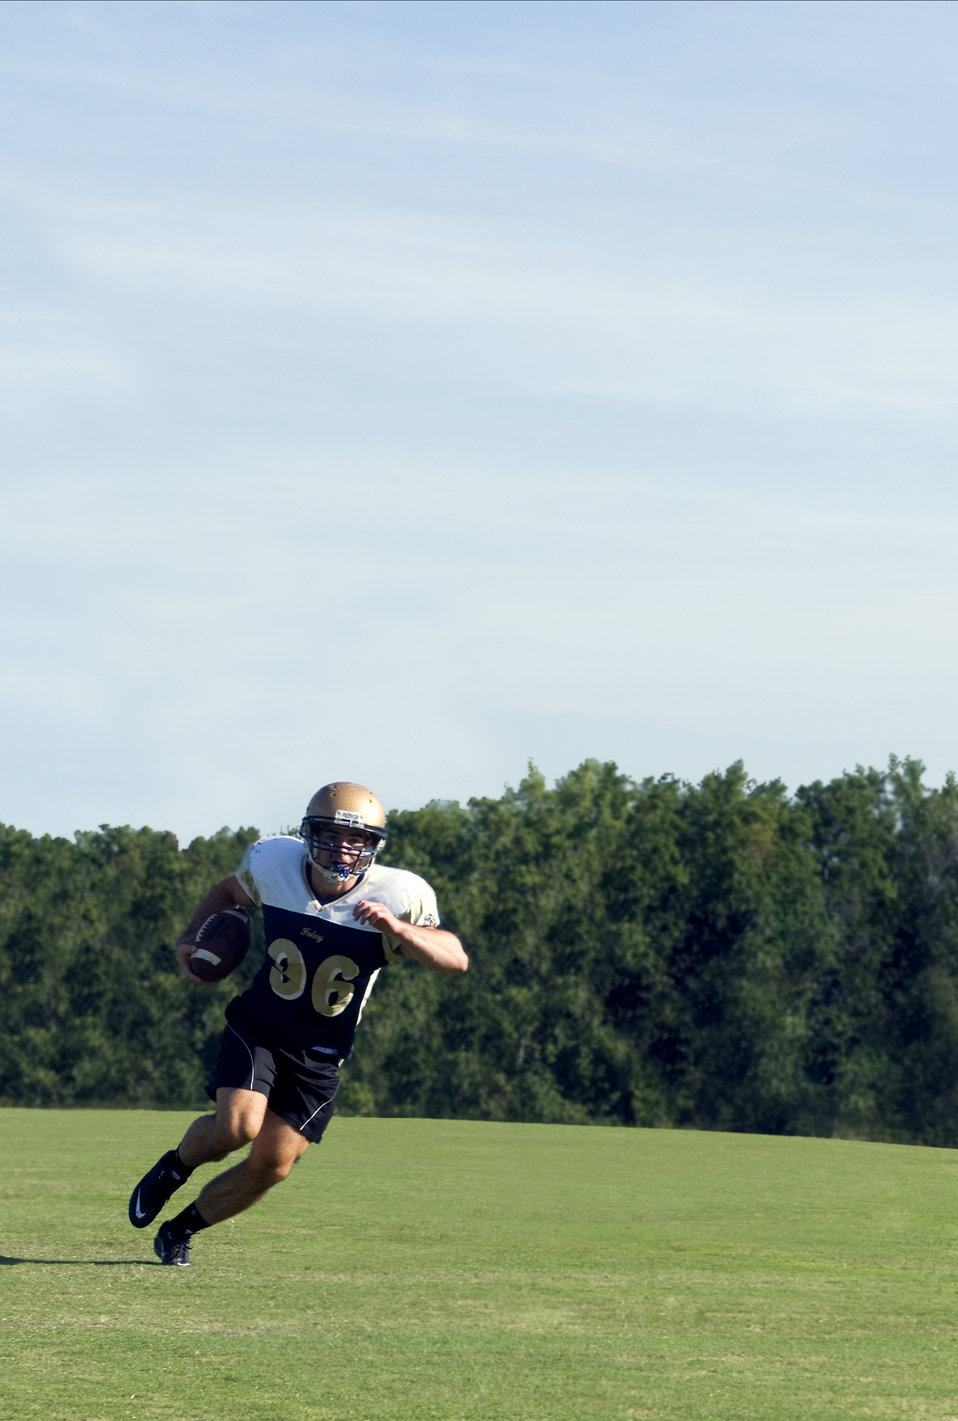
This young man was honing his football skills during a practice session on a bright sunny Georgia day. Wearing shoulder pads beneath his lightweight jersey, a protective football helmet, dark-colored shorts, and footwear specially designed for this kind of activity, this athlete needed to keep in mind his fluid requirements, which he'd need to maintain in order to avoid possible dehydration.